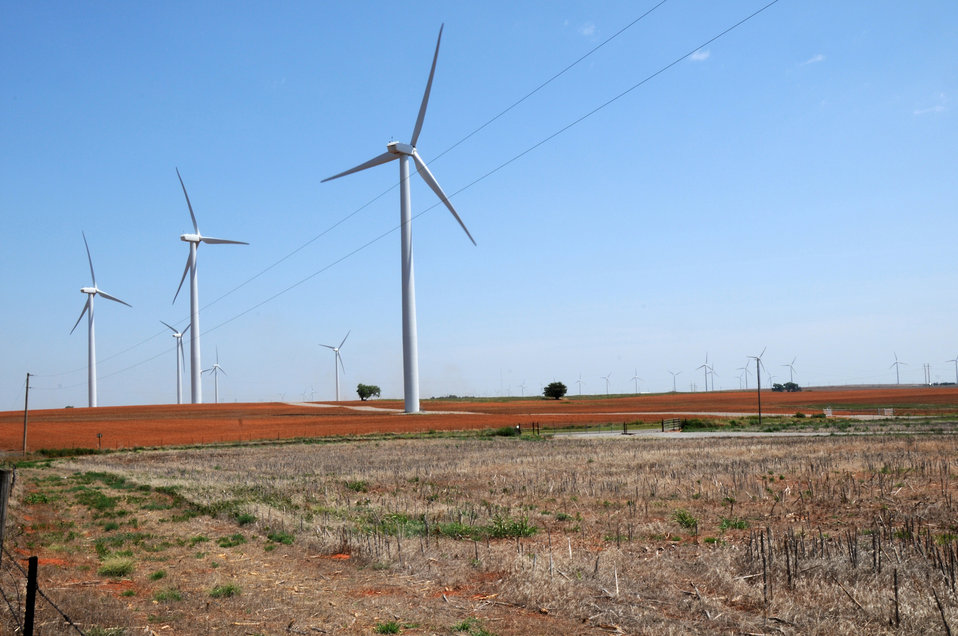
A tractor tills the soil among wind turbines in Oklahoma on August 13, 2009. A wind farm is a group of wind turbines in the same location used to produce electric power. A large wind farm may consist of several hundred individual wind turbines, and cover an extended area of hundreds of square miles, but the land between the turbines may be used for agricultural or other purposes.